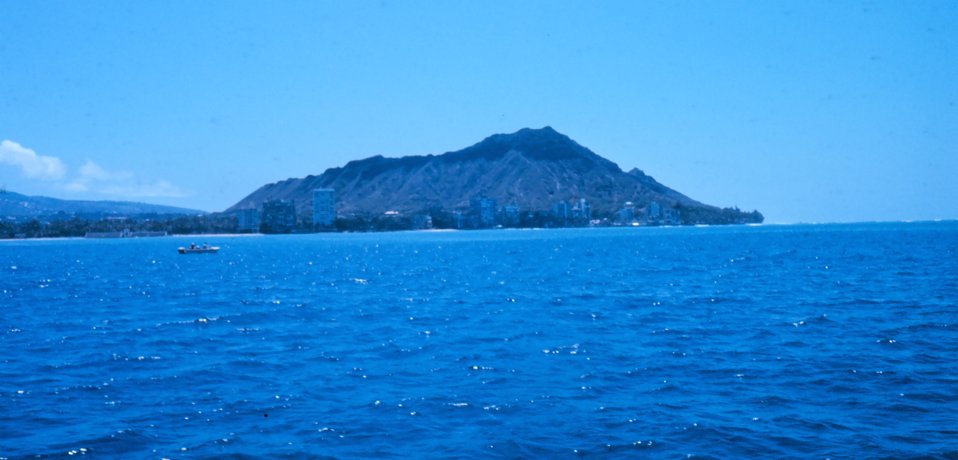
Iconic Diamondhead in the distance